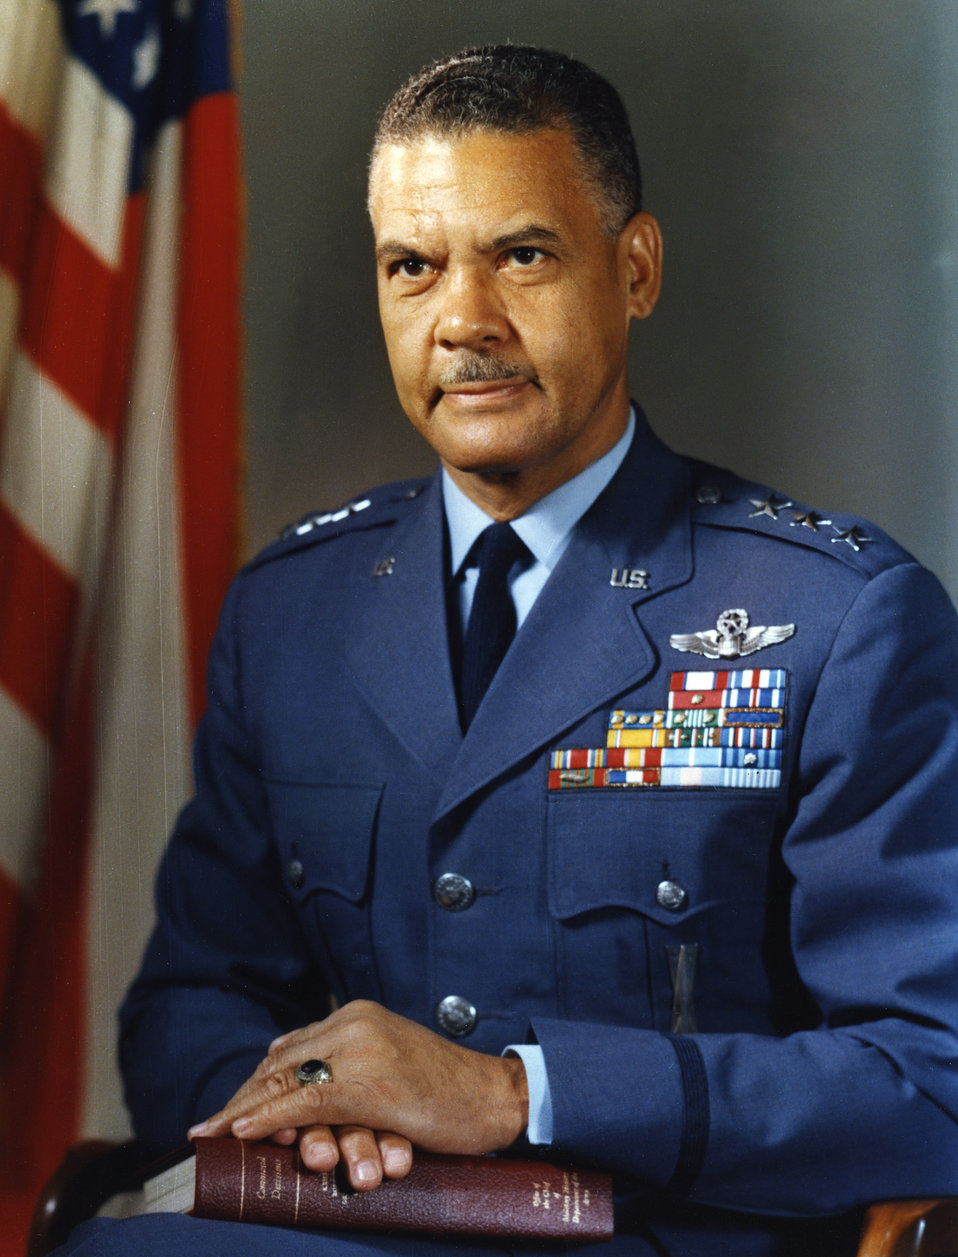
General Benjamin Oliver Davis Jr.

Benjamin O. Davis, an aviation pioneer, is one of the most famous Tuskegee Airmen of World War II.